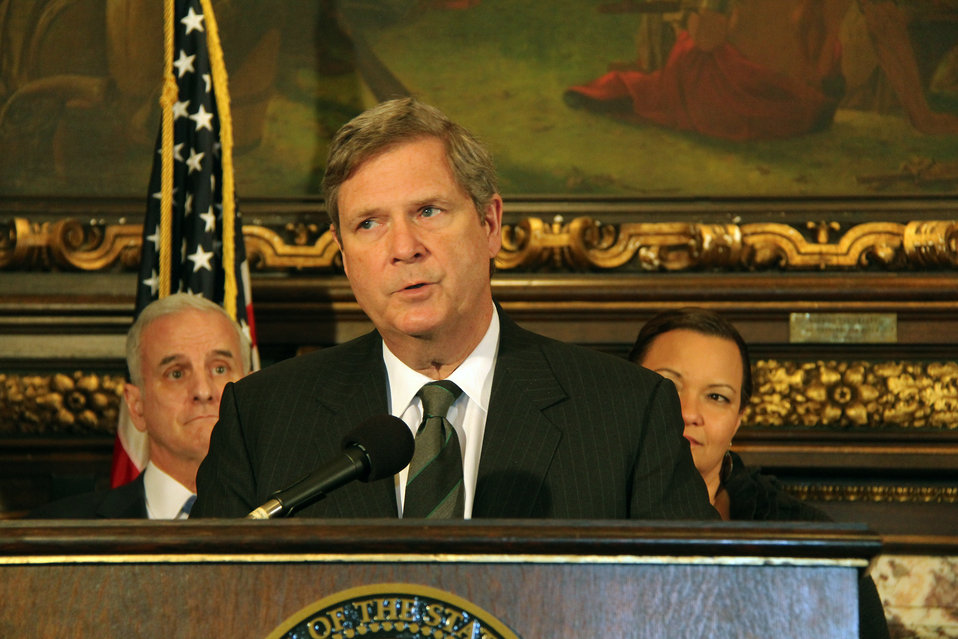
Agriculture Secretary Tom Vilsack (center) along with Minnesota Governor Mark Dayton (left) and U.S. Environmental Protection Agency Administrator Lisa Jackson (right) joined together to sign a memorandum of understanding (MOU) committing the state and federal government to develop a new program that will enhance Minnesota’s water quality by accelerating farmers’ voluntary adoption of on-farm conservation practices. The MOU signing took place in St. Paul, MN, on Monday, January 17, 2012.